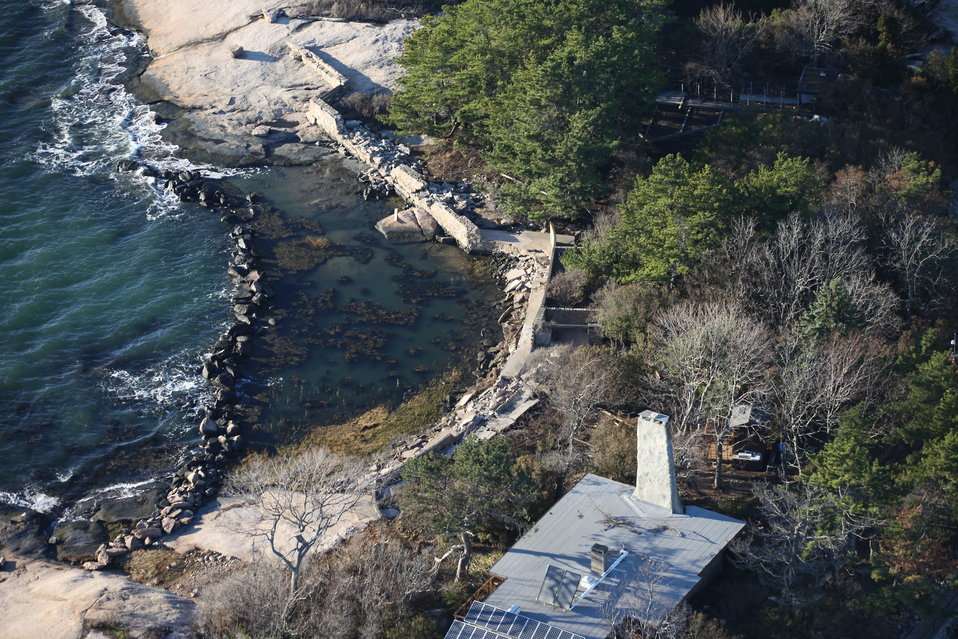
Stewart B. McKinney National Wildlife Refuge-Outer Island (CT)

An aerial view of damage from storm Sandy on Outer Island at the Stewart B. McKinney National Wildlife Refuge.